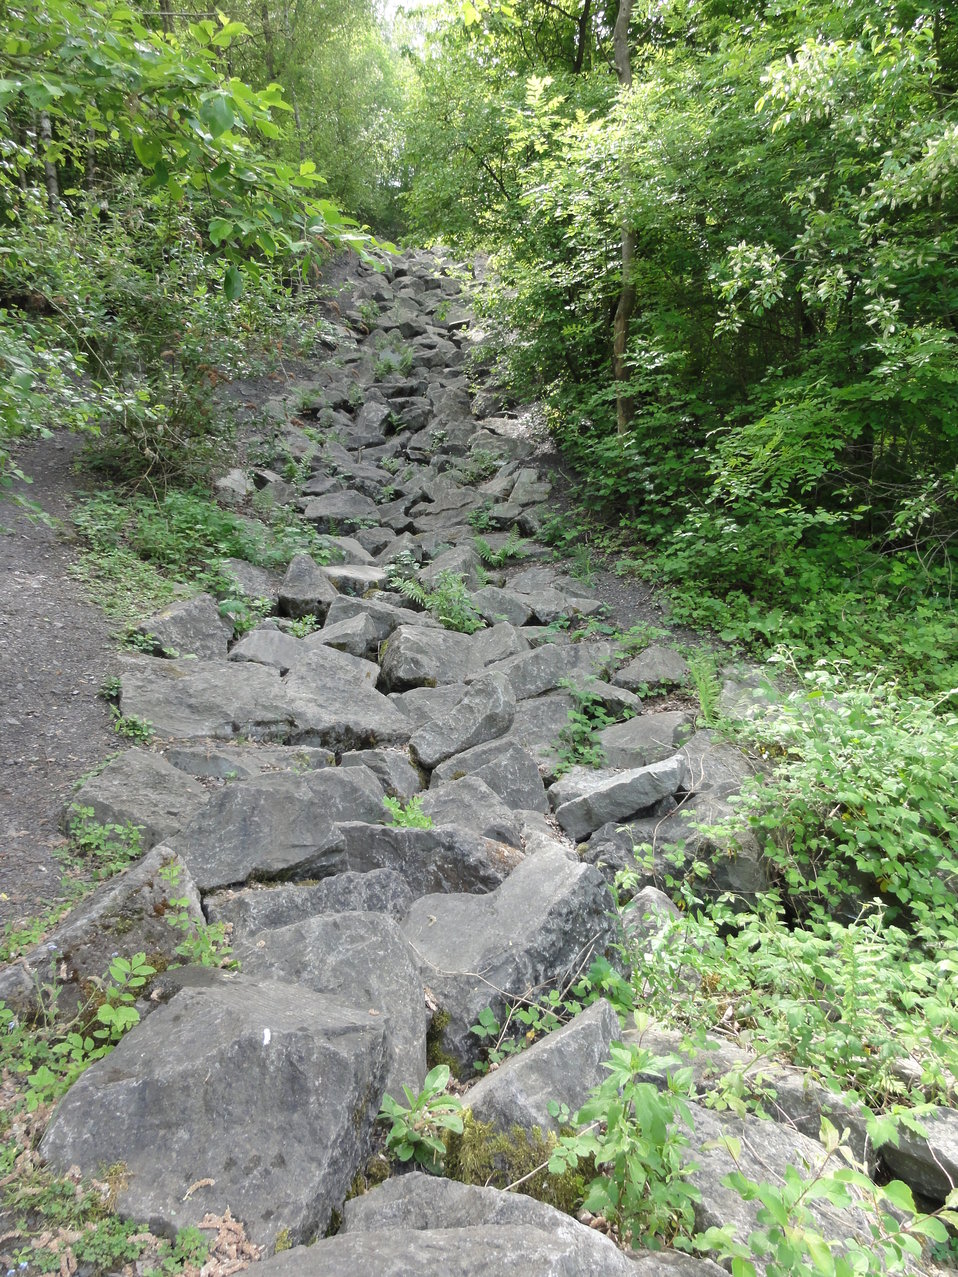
Français : Terril n° 174 dit Sabatier Sud, Fosse Sabatier de la Compagnie des mines d'Anzin, Raismes, Nord, Nord-Pas-de-Calais, France.